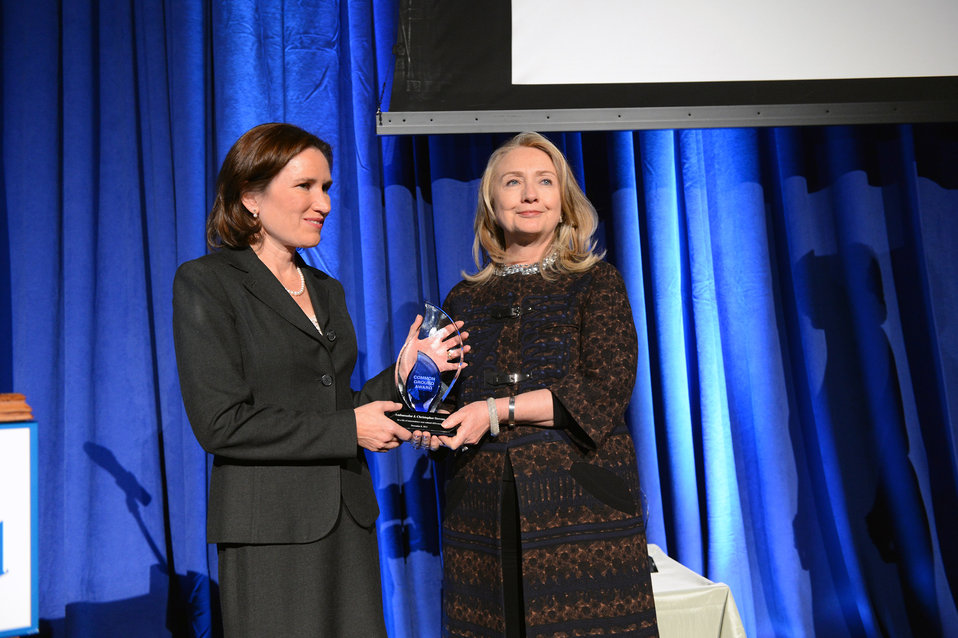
Secretary Clinton Delivers Remarks in Honor of the Late Ambassador Chris Stevens

U.S. Secretary of State Hillary Rodham Clinton delivers remarks at a Search for Common Ground Dinner Reward Ceremony in honor of the late Ambassador Chris Stevens in Washington, D.C. on November 8, 2012.